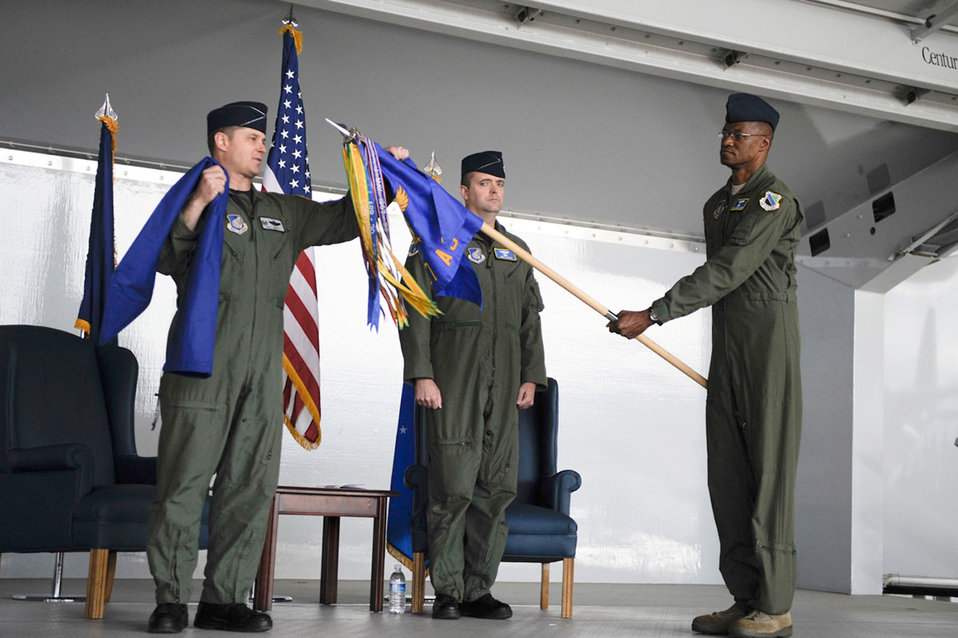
537th AS Airmen fly again after 40 years

Col. William Routt unfurls the 537th Airlift Squadron guidon, held by Senior Master Sgt. Steve Vaughn, as Lt. Col. Thomas McGee looks on April 29, 2011 during the unit's activation ceremony at Joint Base Elmendorf-Richardson, Alaska. Colonel Routt is the 3rd Operations Group commander, and Colonel McGee is the 537th AS commander.